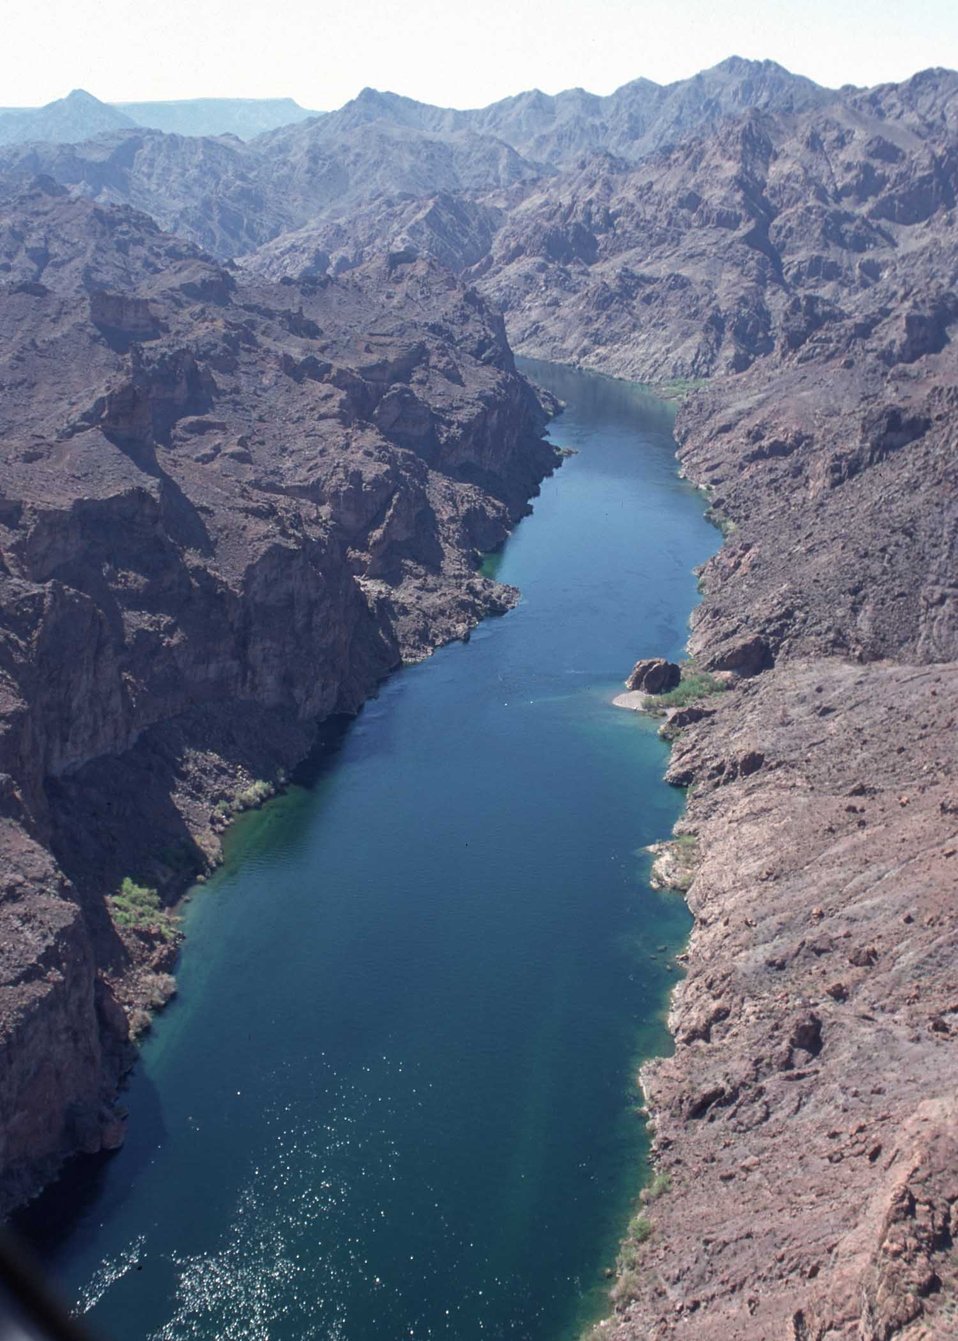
Colorado River below Hoover Dam, Clark County, NV.